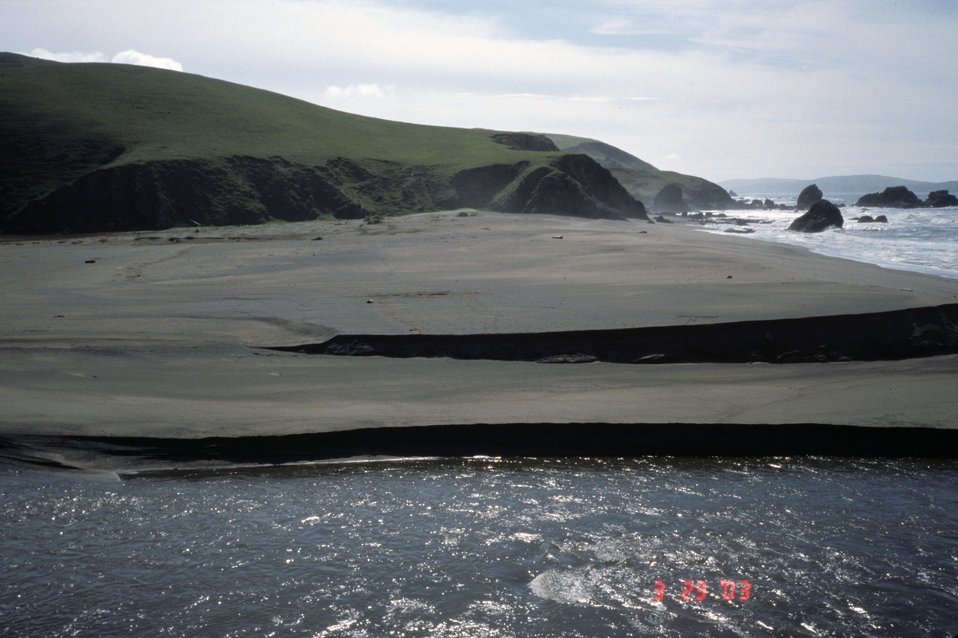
Pinnacle Gulch Beach